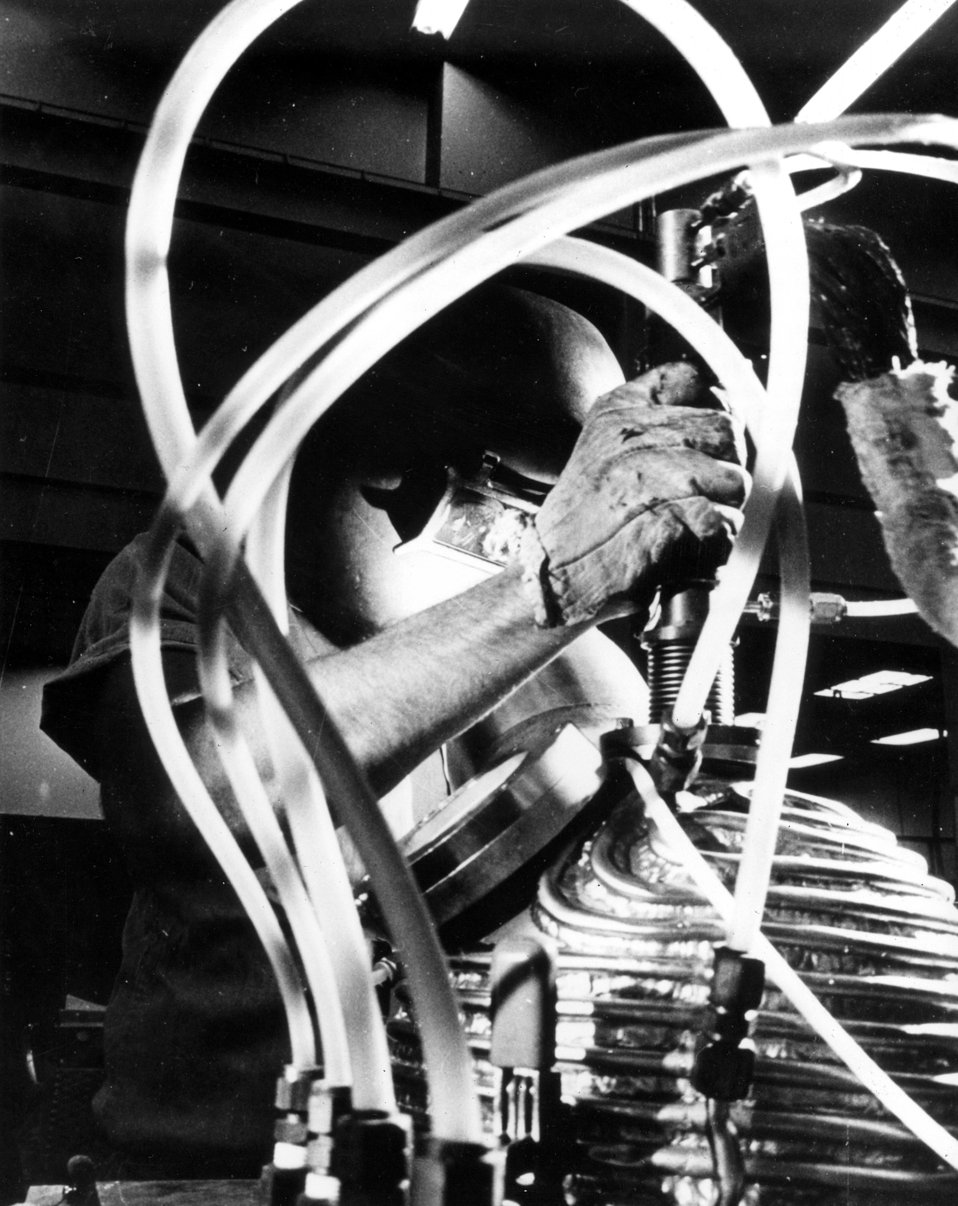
Special metal alloys required in the construction of safe and reliable nuclear reactors are developed and tested at USAEC laboratories. c. 1971